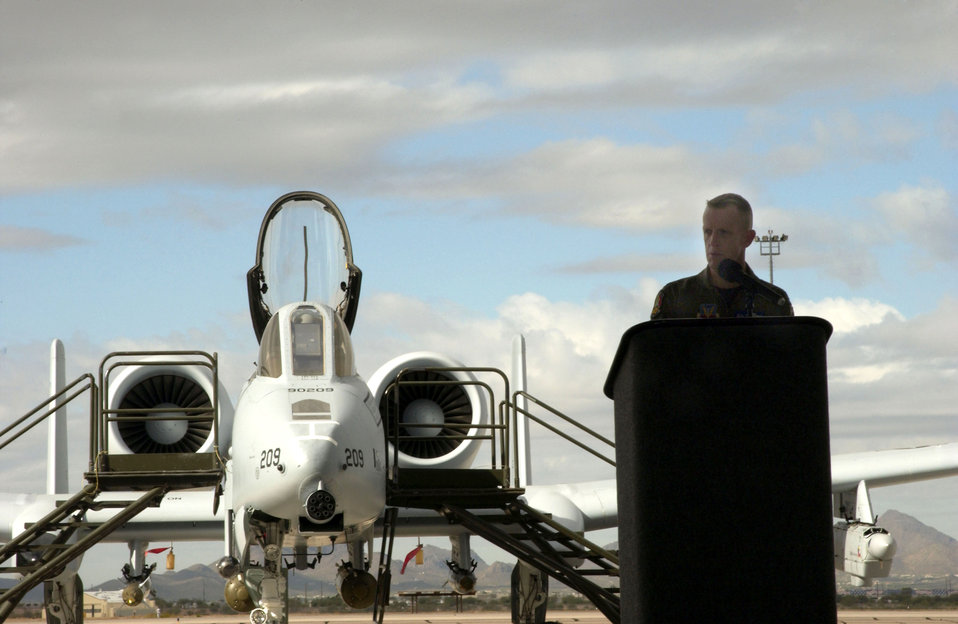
Enhanced A-10 arrives at Davis-Monthan

Col. Kent Laughbaum introduces the new A-10C Thunderbolt II during a 355th Wing roll-out ceremony at Davis-Monthan Air Force Base, Ariz. Nov. 29. The A-10 has been modified with precision engagement technology to create the new and improved A-10C. The enhancements include full integration of sensors, multi-functional color displays and a new hands-on-throttle-and-stick interface. Colonel Laughbaum is the 355th Wing commander.